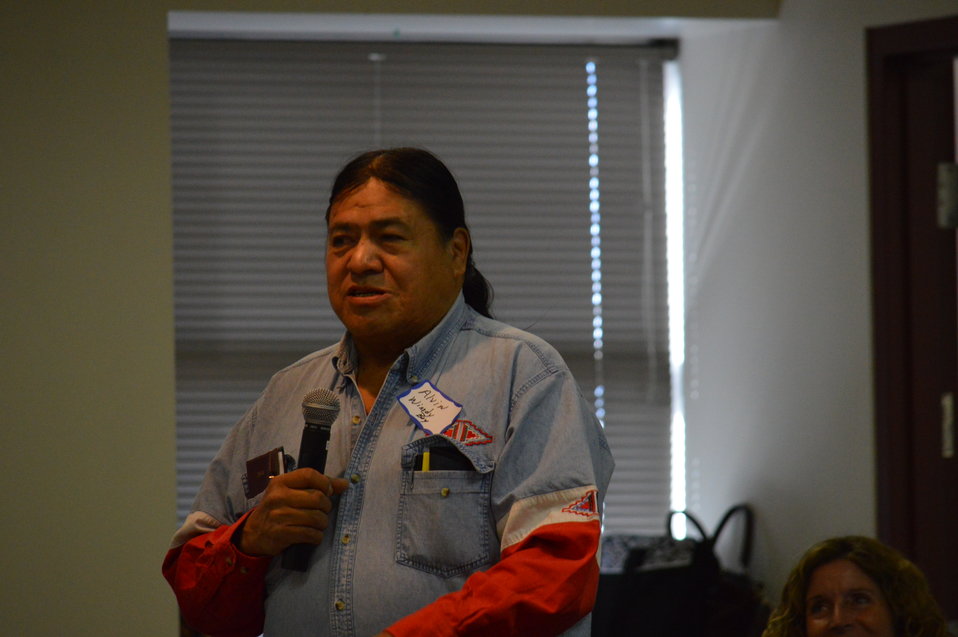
Eagle Summit III in Denver, Colorado on March 20, 2014 at the Rocky Mountain Arsenal National Wildlife Refuge.